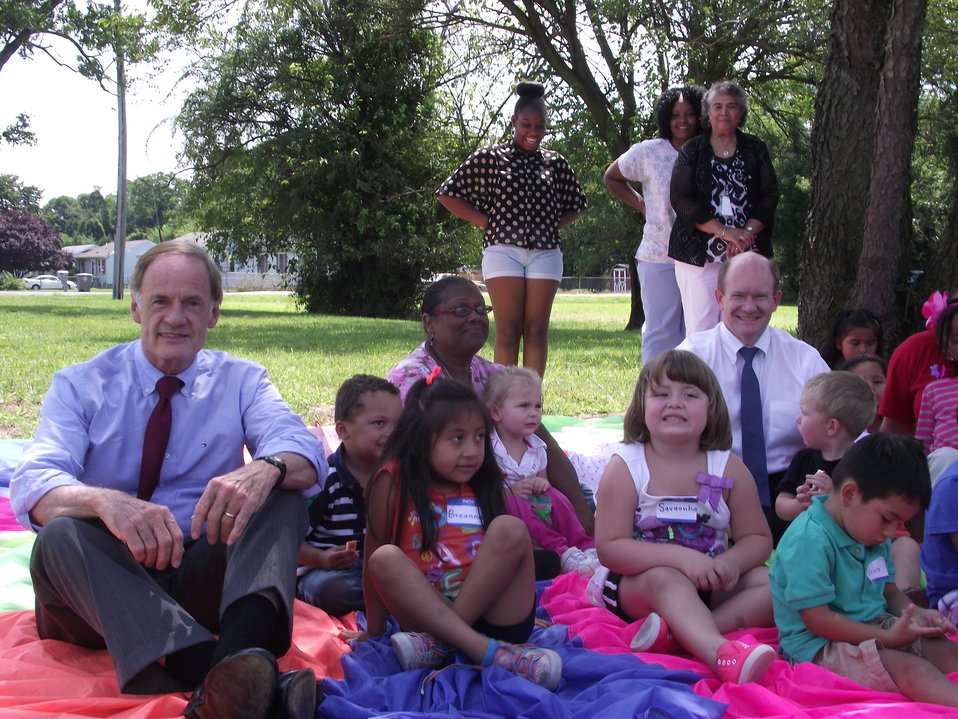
United States Senators Tom Carper (left) and Chris Coons (right) with children attending Primeros Pasos (First Steps). The children will move to a larger facility with funding assistance from USDA.